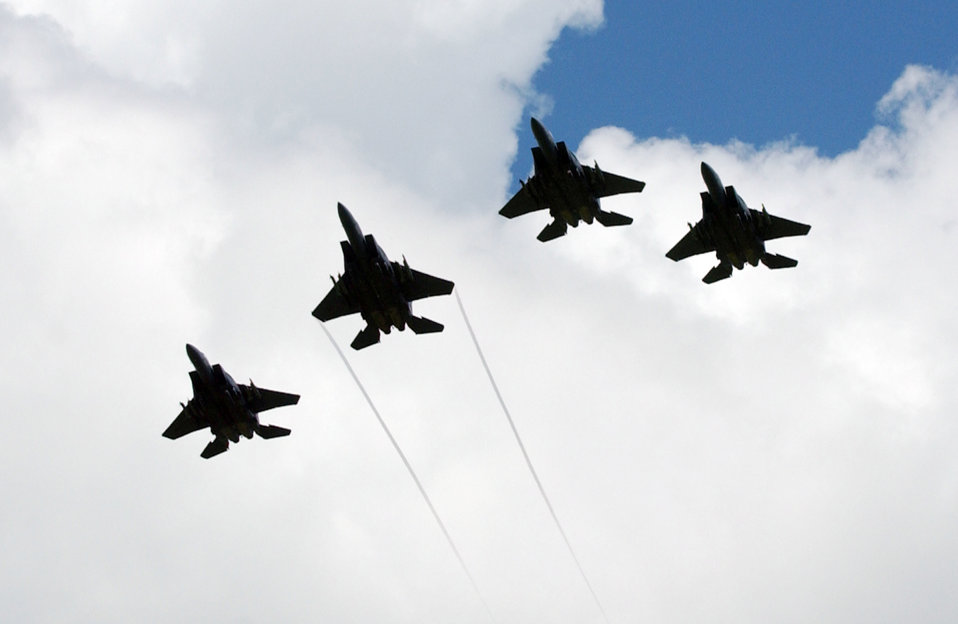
Formation of remembrance

OVER CAMBRIDGE, England -- Four F-15E Strike Eagles prepare to perform a